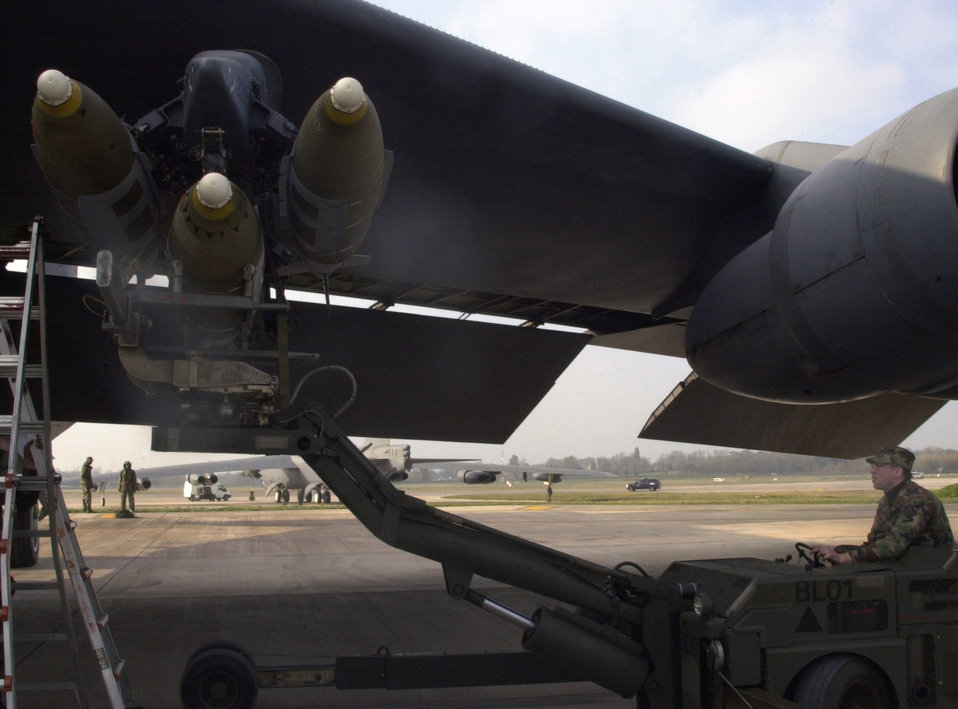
Lift truck

OPERATION IRAQI FREEDOM -- Airman 1st Class Dino Dan, weapons loader, uses an MHU-83 lift truck to load a GBU-31 joint direct attack munition onto the wing of a B-52 Stratofortress.